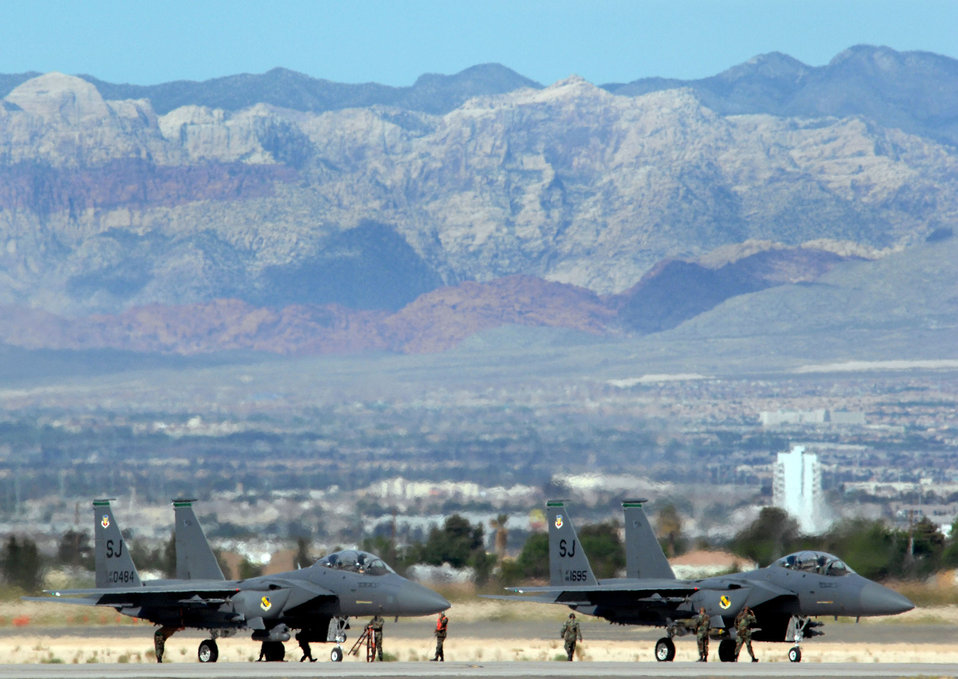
Green Flag launches Strike Eagles

Two F-15E Strike Eagles prepare to launch April 24 in support of Exercise Green Flag at Nellis Air Force Base, Nev. During Green Flag, aircrews practiced employing airpower within an irregular warfare environment.